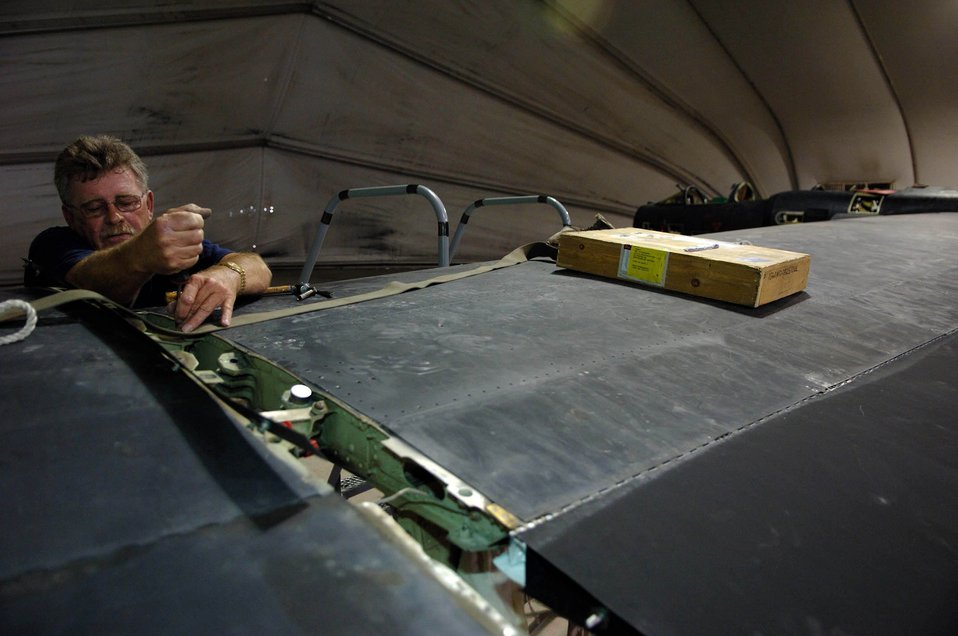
They only have eyes for U-2

Grady Lollis conducts phase maintenance on a U-2 May 23 at a Southwest Asian air base. Mr. Lollis is a 380th Expeditionary Aircraft Maintenance Squadron phase dock crew member.